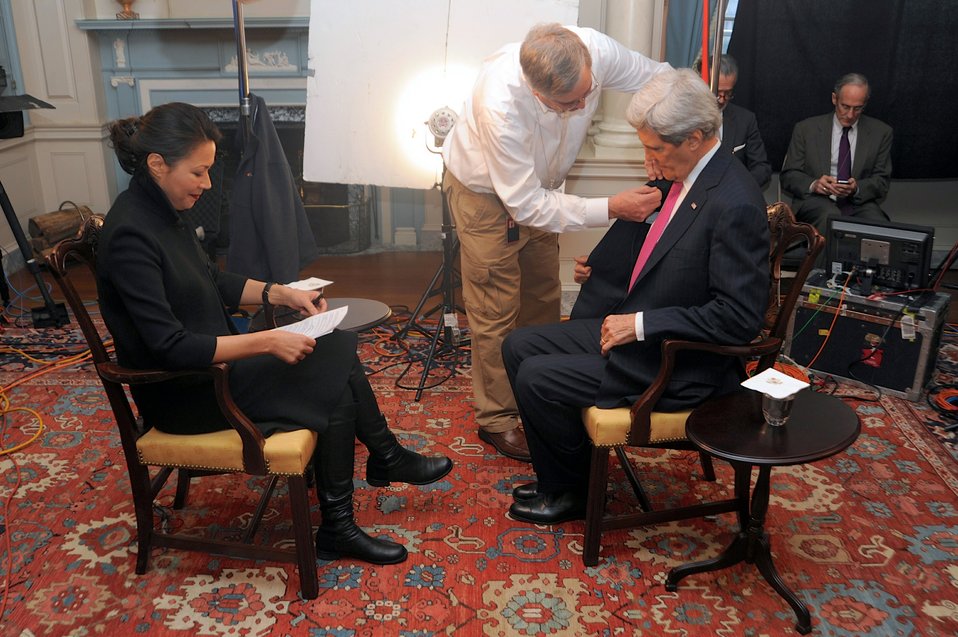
Secretary Kerry Prepares for Interview With NBC News Correspondent Curry

A technician applies a lapel microphone to U.S. Secretary of State John Kerry before he begins an interview with NBC News Correspondent Ann Curry, focused on the Sochi Olympics and Iran nuclear talks, at the U.S. Department of State in Washington, D.C., on February 6, 2014.